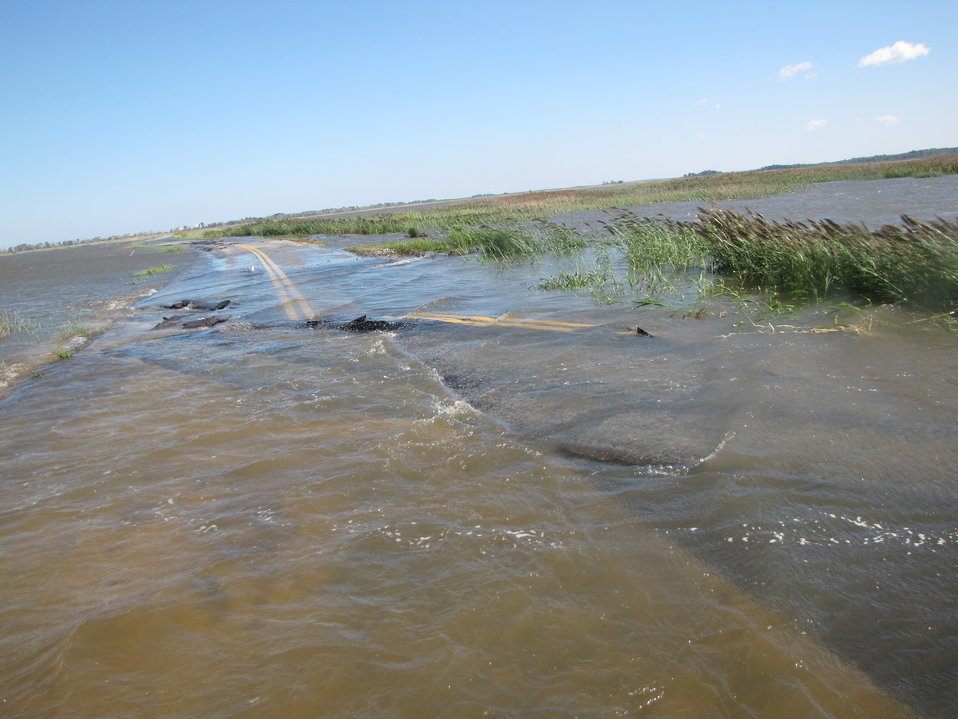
Flooded road at Prime Hook

Flood damage from Hurricane Irene at Prime Hook National Wildlife Refuge in Delaware.